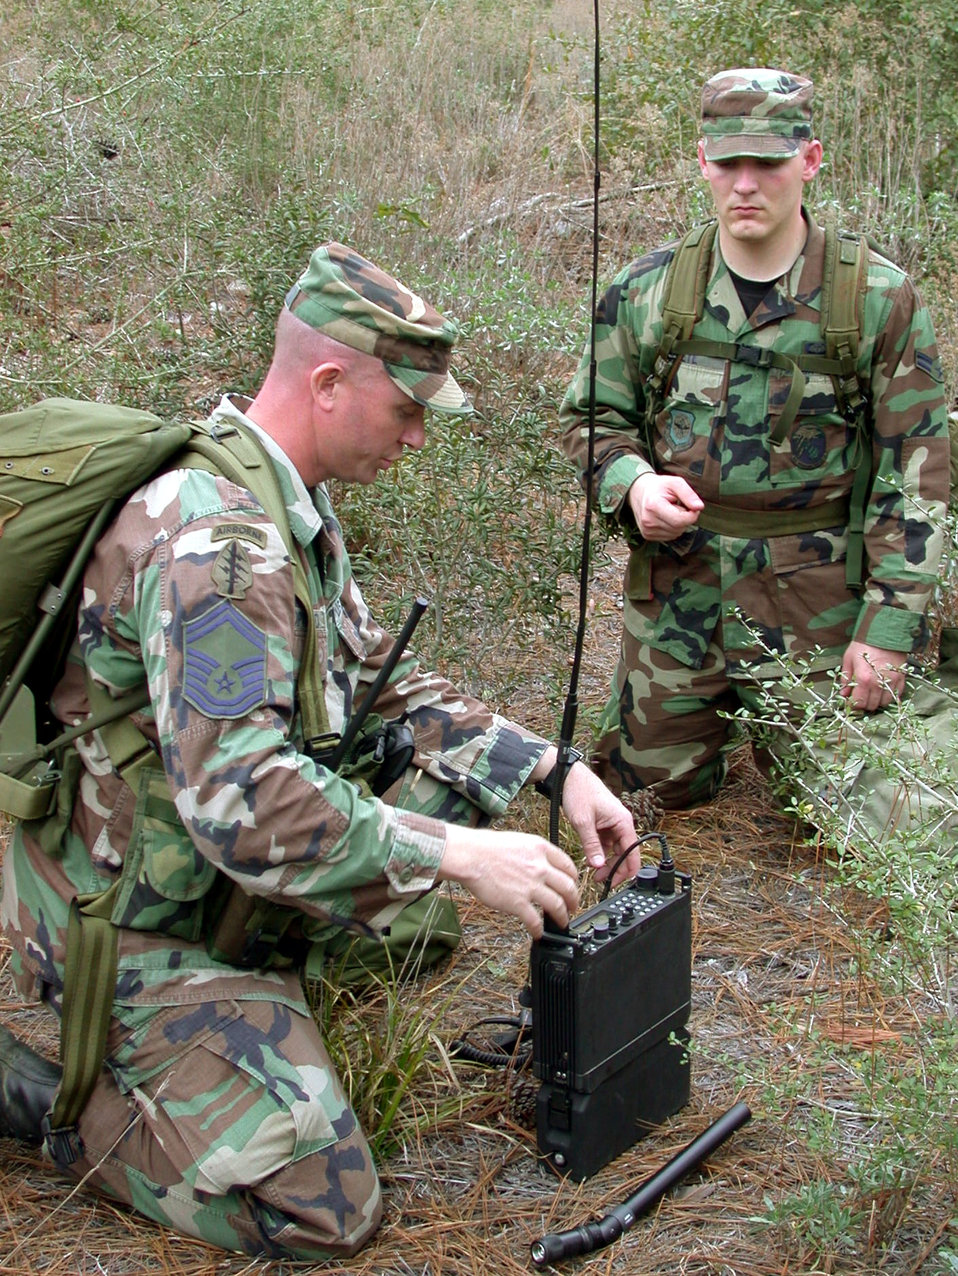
Weather recruiting seminar

HURLBURT FIELD, Fla. -- Senior Master Sgt. Andy Hopwood demonstrates the AN/PSC-5 Spitfire Radio to Airman 1st Class Russell Beye during the special operations and airborne weather familiarization and recruiting seminar here March 5. Special operations weather forecasters use the radio to pass observations, forecasts and imagery to and from forward locations. Sergeant Hopwood is assigned to the 10th Combat Weather Squadron here, and Airman Beye is a regional weather forecaster from 15th Operational Weather Squadron at Scott Air Force Base, Ill.